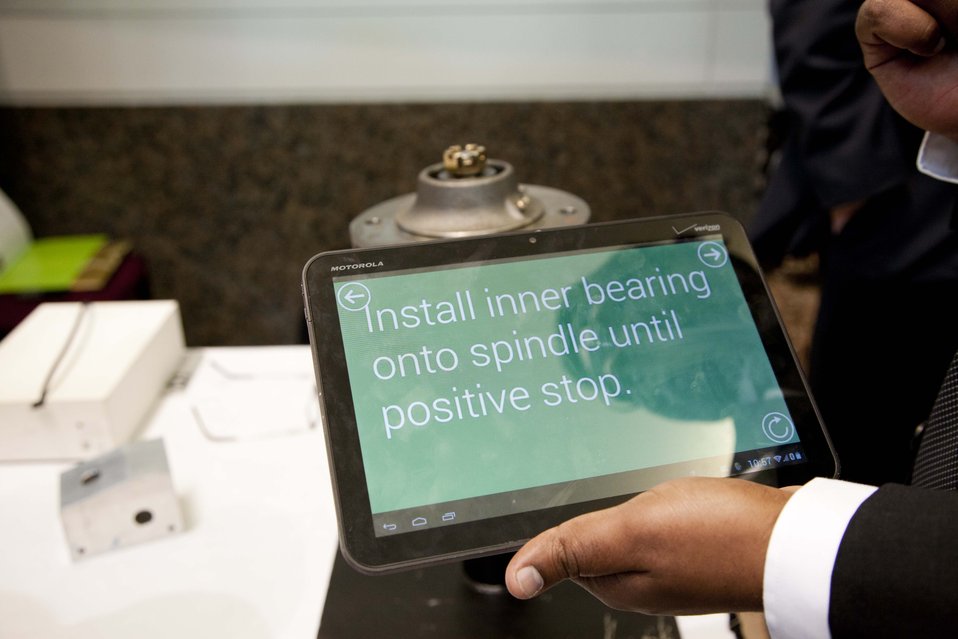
AEMC Summit

Pictured here is a tablet that could be used in conjunction with Google Glass to increase worker safety on the manufacturing line. Instead of having to check off a piece of paper or swipe on a tablet, an assembly line worker could advance assembly instructions by completing a step while wearing the Google Glass. This would help increase worker safety by keeping their hands free.